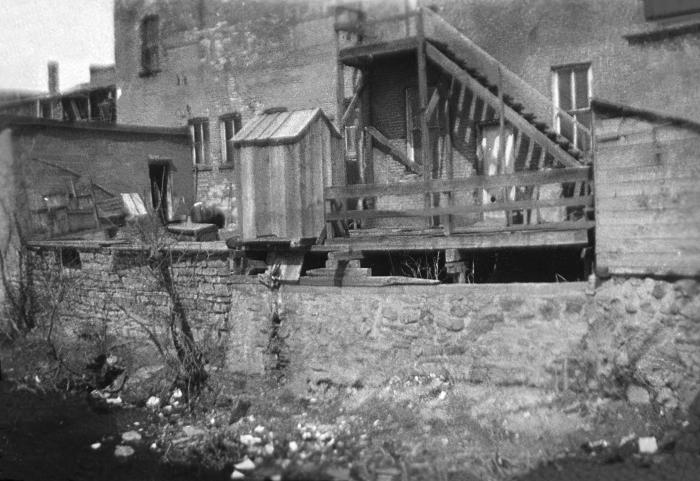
This historic 1921 photograph showed an example of an unsanitary privy located in Marshall, Minnesota. The placement of the privy in an area easily accessible to people, increased its potential for transmitting bacterial diseases to the nearby potable water supply.